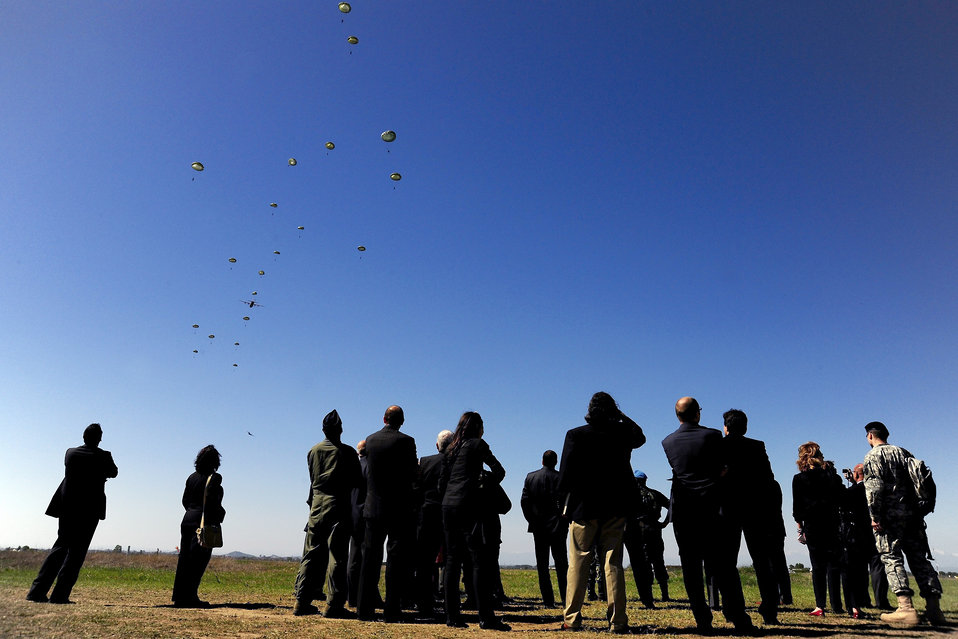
Dignitaries visit U.S., Bulgarian exercise

Bulgarian Minister of Defense Anu Anguelov and U.S. Ambassador to Bulgaria James B. Warlick Jr. and their staff watch U.S. and Bulgarian paratroopers jump from an Air Force C-130J during Operation Thracian Spring 2010's media day April 27, 2010, at Plovdiv Airport in Bulgaria.